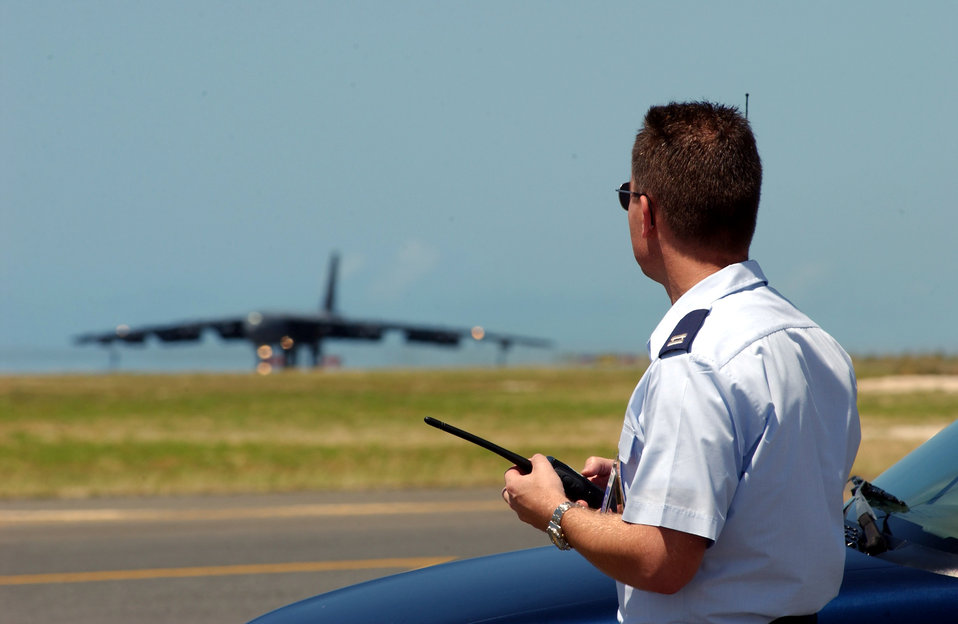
Escape to Hawaii

HICKAM AIR FORCE BASE, Hawaii -- Capt. Jerry Loeffelbein monitors a B-52 Stratofortress on the runway April 6. Four B-52s arrived here from Andersen Air Force Base, Guam, to escape Typhoon Sudal which missed the island April 7. The B-52s are deployed to Andersen from Minot AFB, N.D. Captain Loeffelbein is the 15th Airlift Wing's airfield operations flight commander.